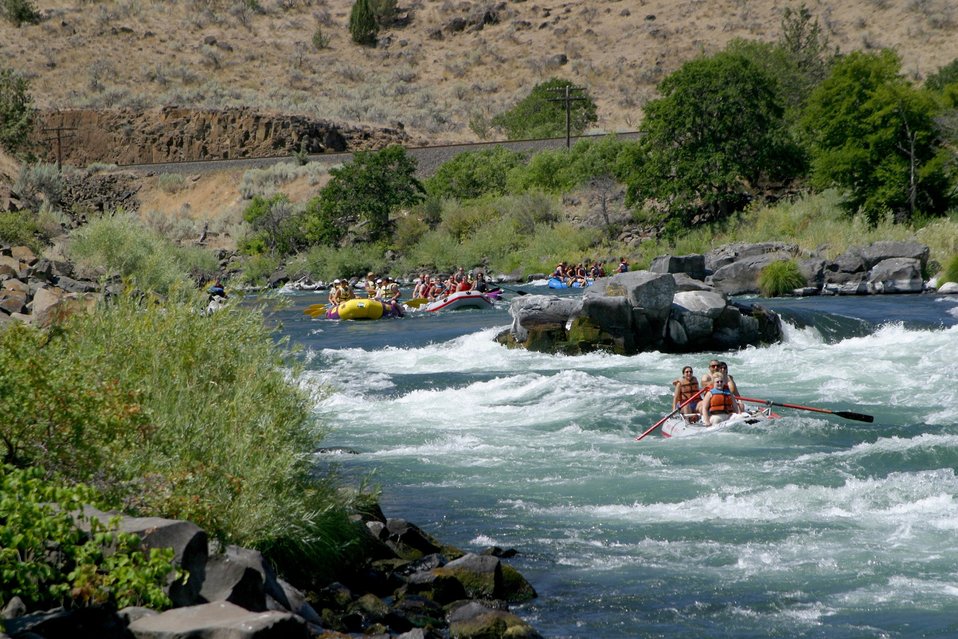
Wapinitia Rapids class III, has large roller coaster waves. 7/26/03 Pelton Dam 3600 cfs: Moody Rapids 4300 cfs.